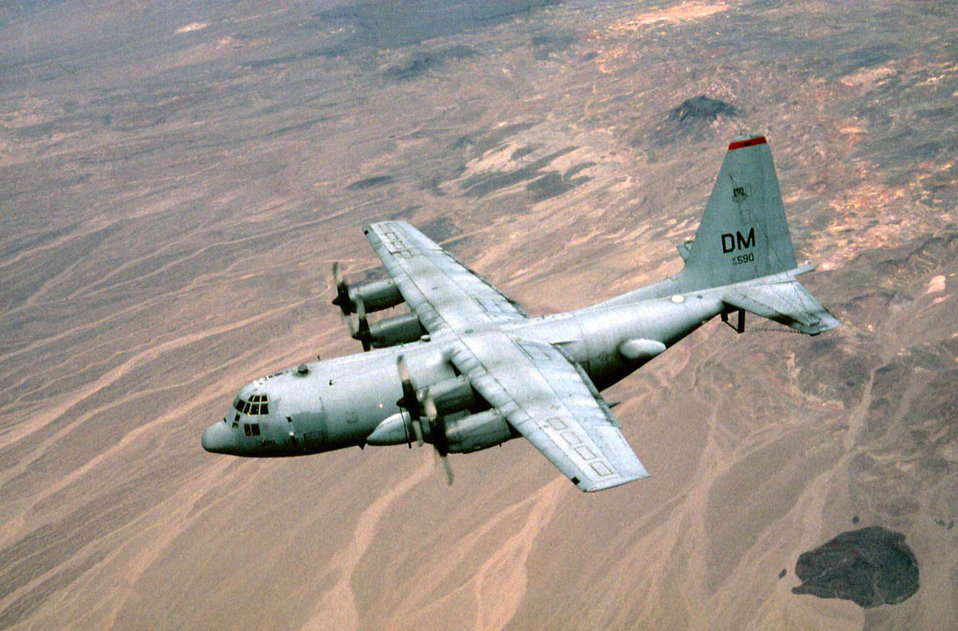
Compass Call

FILE PHOTO -- Compass Call is the designation for a modified version of Lockheed corporation's EC-130H Hercules aircraft configured to perform tactical command, control and communications countermeasures. Specifically, the modified aircraft uses noise jamming to prevent communication or degrade the transfer of information essential to command and control of weapon systems and other resources. It primarily supports tactical air operations but also can provide jamming support to ground force operations. Modifications to the aircraft include an electronic countermeasures system, air refueling capability and associated navigation and communications systems.